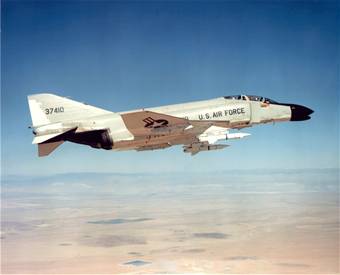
Remains identified

The remains of an Air Force pilot, shot down over North Vietnam in 1967 while flying an F-4 Phantom like the one shown here, have been identified and returned to his family for burial.